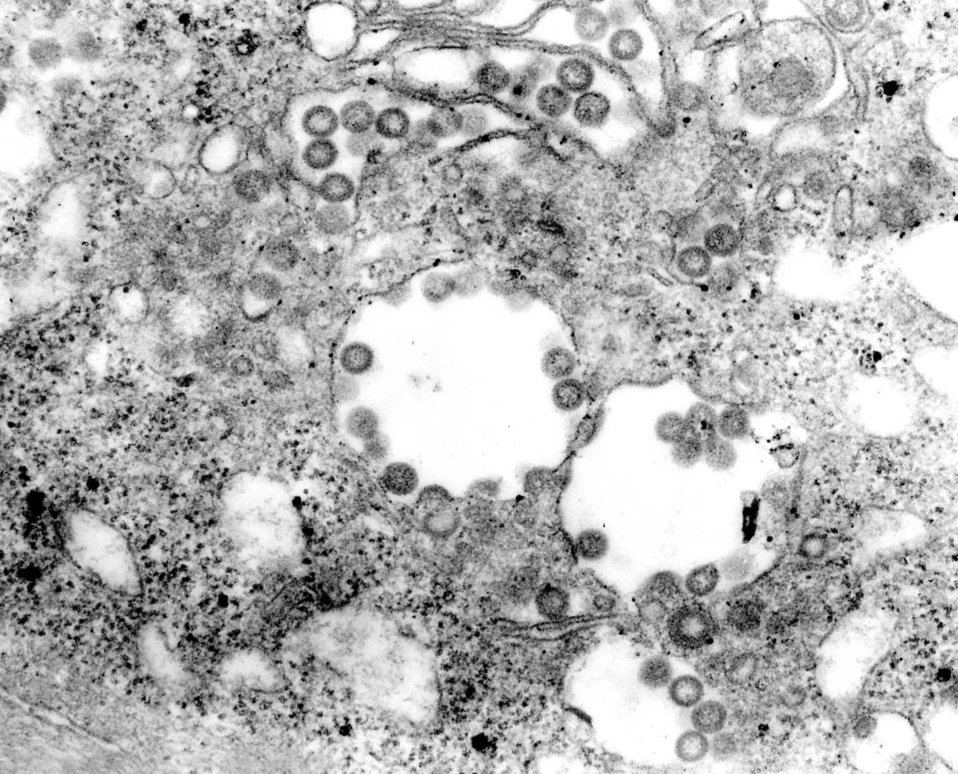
This transmission electron micrograph (TEM) depicted a highly magnified view of a tissue that had been infected with Rift Valley fever (RVF) virus. RVF virus is a member of the genus Phlebovirus in the family Bunyaviridae and was first reported in livestock in Kenya around 1900. It is found to be an acute, fever-causing viral disease that affects domestic animals (such as cattle, buffalo, sheep, goats, and camels) and humans. RVF is most commonly associated with mosquito-borne epidemics during years of unusually heavy rainfall.